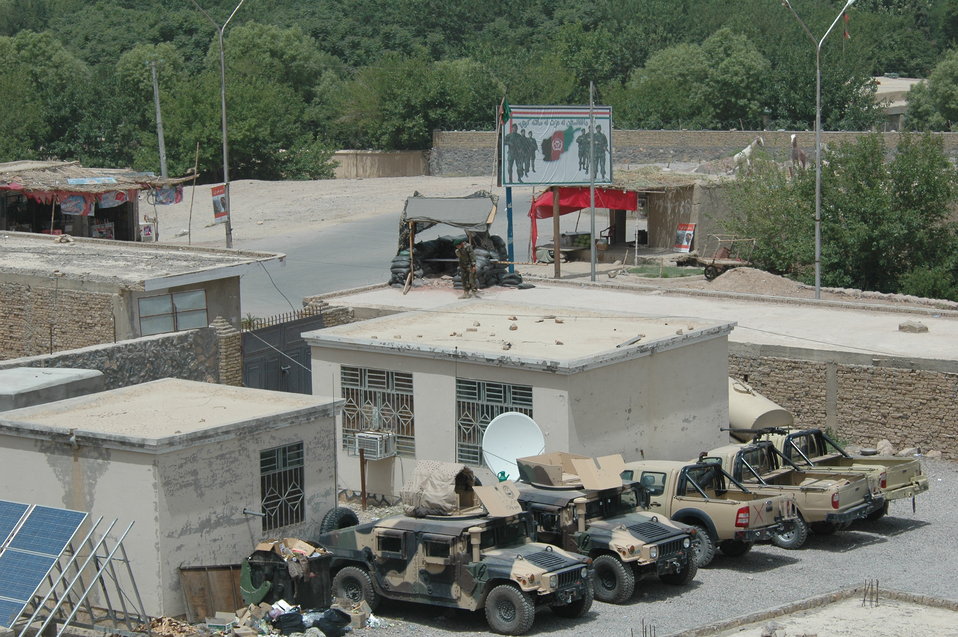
CODEL Berman